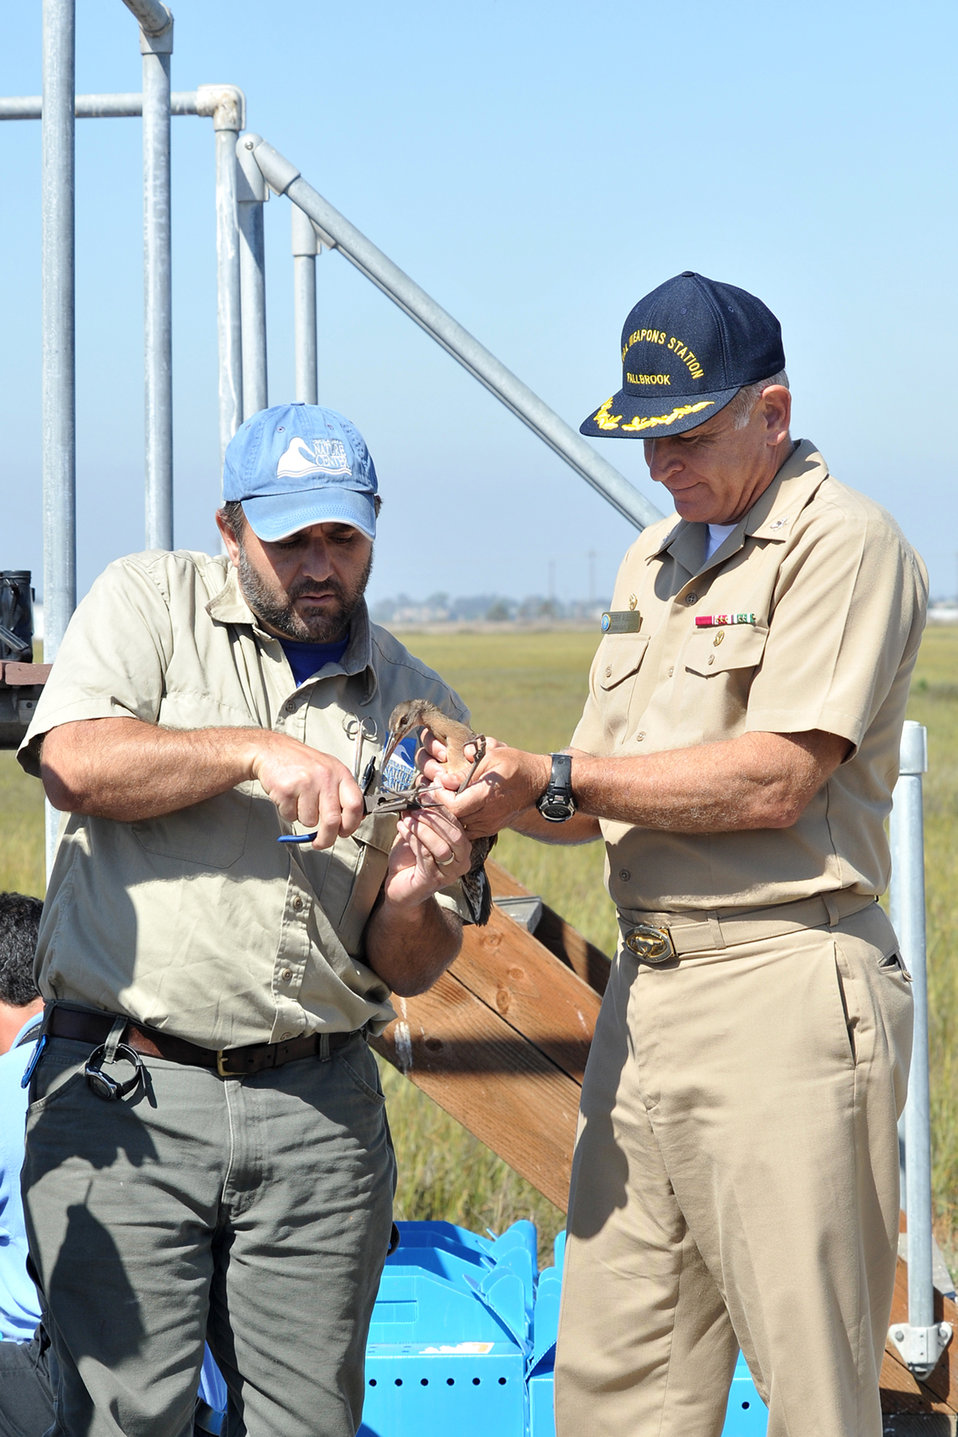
Banding clapper rails before release

Naval Weapons Station Seal Beach Commanding Officer, Captain Terry Auberry holds a clapper rail while Charles Gailband of the Chula Vista Nature Center, bands it.